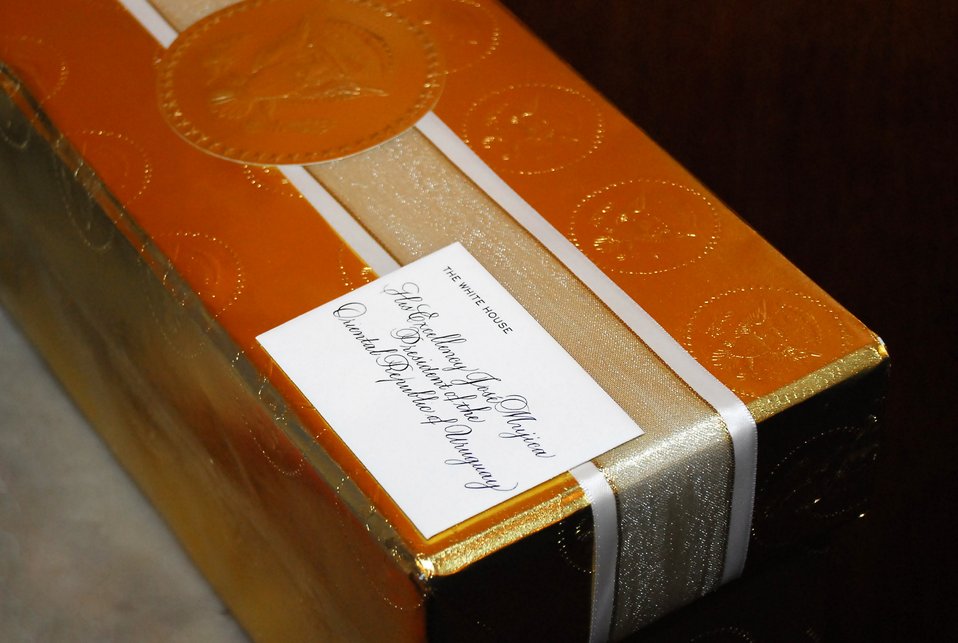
Secretary Clinton's Present for Uruguay President-elect

U.S. Secretary of State Hillary Rodham Clinton's present for President-elect Jose Mujica, Montevideo, Uruguay March 1, 2010.